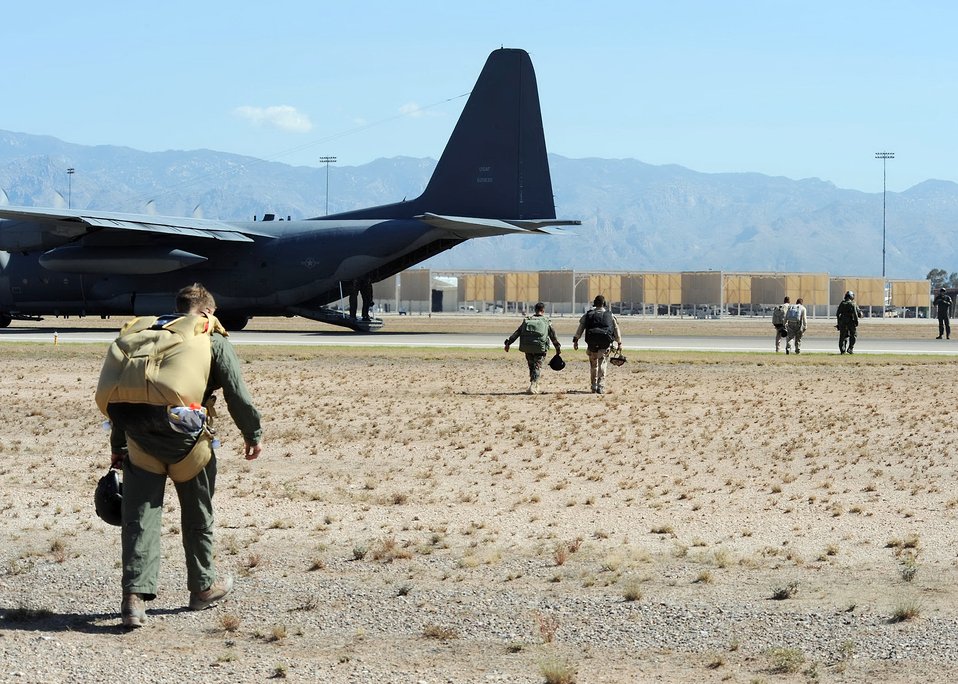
Multi-lift airdrop at Davis-Monthan AFB

Airmen gather on the flightline before boarding an HC-130 Aug. 15 at Davis-Monthan Air Force Base, Ariz. The Airmen from Air Force Reserve Command's 306th Rescue Squadron were participating with the 79th Rescue Squadron also at Davis-Monthan in the first multi-lift HC-130 airdrop here.